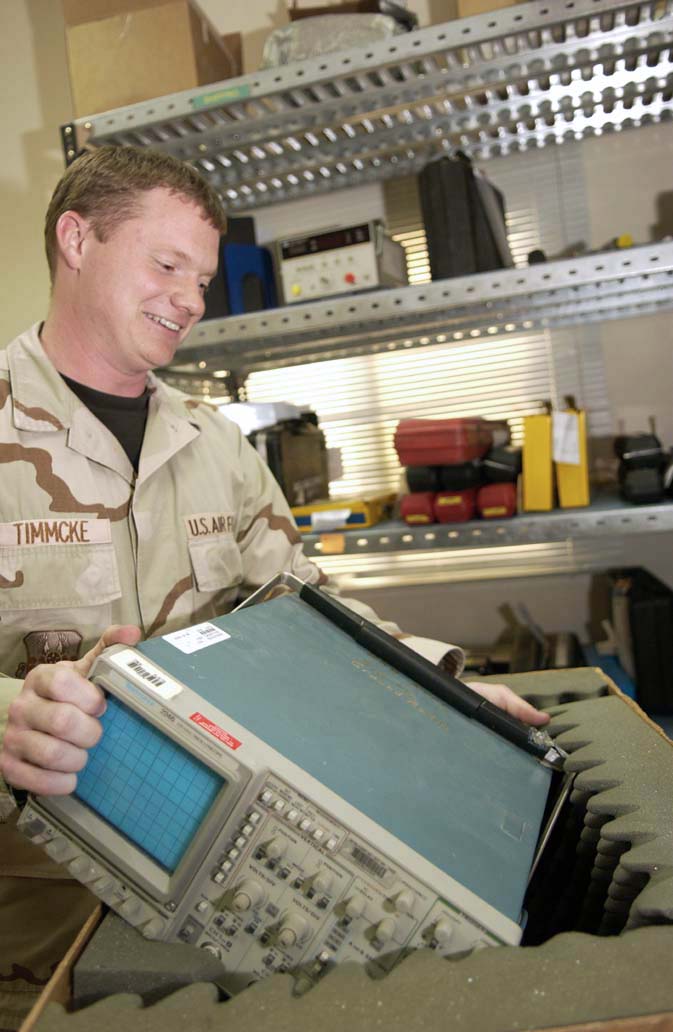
PMEL Airmen ensure equipment is ready for fight

SOUTHWEST ASIA -- Staff Sgt. Kevin Timmcke packs an oscilloscope being sent to the radio maintenance shop at Kirkuk Air Base, Iraq. He is assigned to the 379th Expeditionary Maintenance Squadron's precision, measurement and equipment laboratory, and he is deployed from Nellis Air Force Base, Nev.